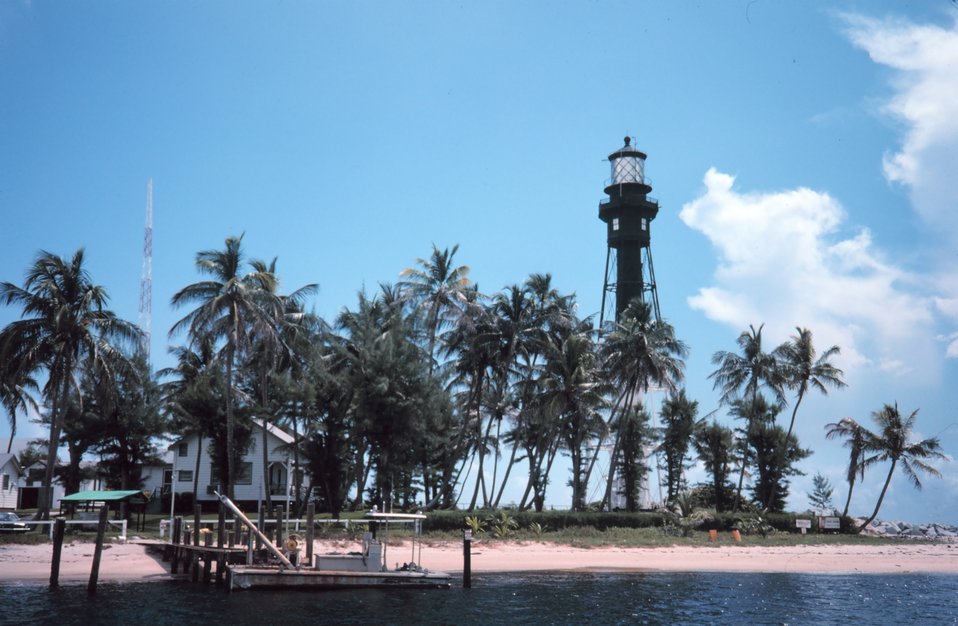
The Hillsboro Lighthouse at Pompano Beach